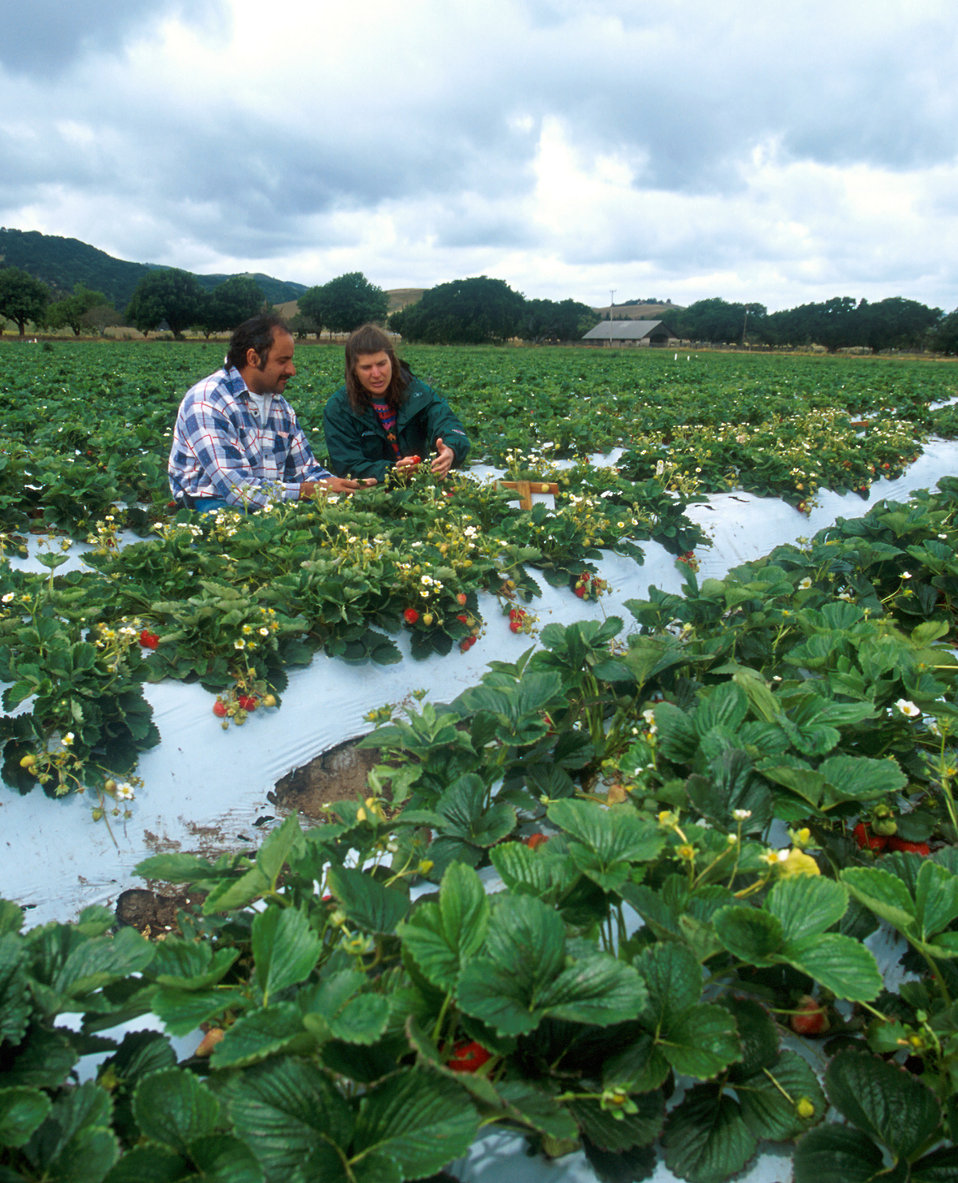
Farm manager Arthur Ayala and Carolee Bull discuss commercial variety trials being conducted at the farm of Dale and Christine Coke in San Juan Bautista, CA.